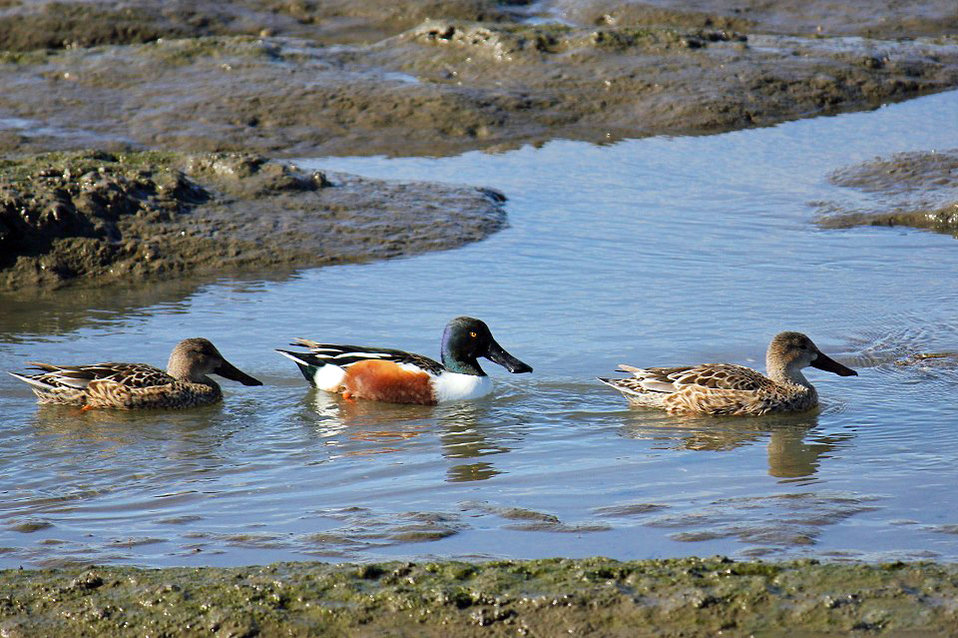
Northern Shovelers

Female (left and right) and male (center) Northern shovelers exploring the newly restored Pond 10 from the South San Diego Bay Restoration and Enhancement Project.